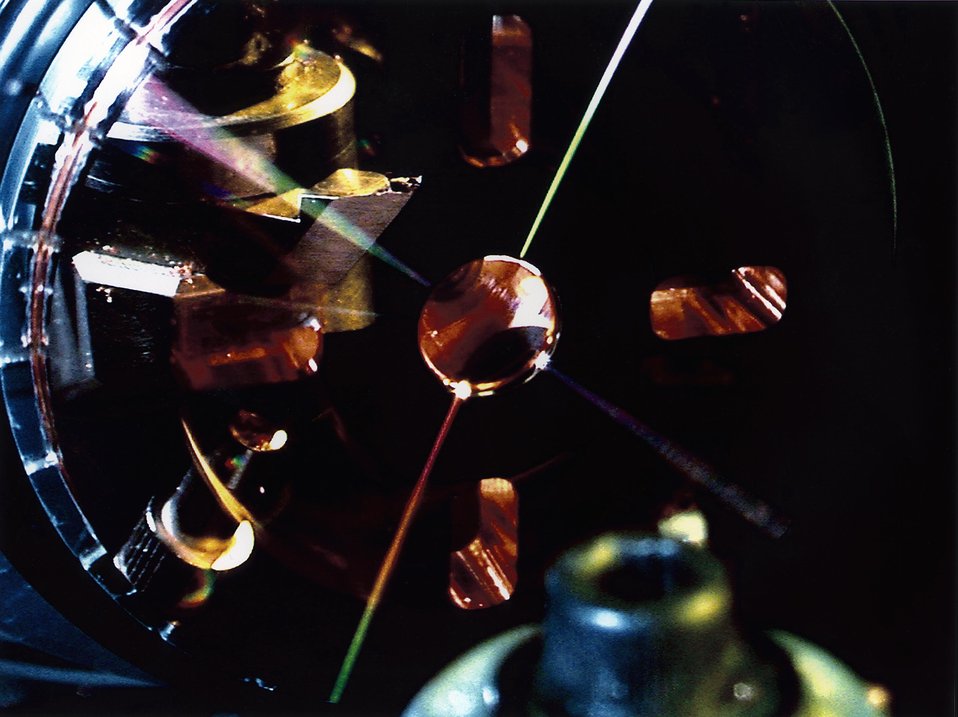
THE COPPER ACCELERATOR STRUCTURES ARE MADE UP OF MORE THAN 200 PRECISION MACHINED COPPER CELLS.

THE NEXT LINEAR COLLIDER (NLC) IS BEING DEVELOPED BY A COLLABORATION OF FOUR DOE LABORATORIES - STANFORD LINEAR ACCELERATOR CENTER (SLAC), LAWRENCE LIVERMORE, AND LAWRENCE BERKELEY NATIONAL LABORATORIES, AND FERMI NATIONAL ACCELERATOR LABORATORY (FNAL OR FERMILAB). PHYSICISTS BELIEVE THAT THE NLC, AND OTHER EXTREME HIGH-ENERGY PARTICLE ACCELERATORS WILL LEAD THE WAY IN ANSWERING SOME OF THE MOST FUNDAMENTAL QUESTIONS OF SCIENCE, SUCH AS HOW PARTICLES ACQUIRE MASS, THE STRUCTURE OF SPACE-TIME AND WHAT CONSTITUTES THE DARK MATTER OF THE UNIVERSE.